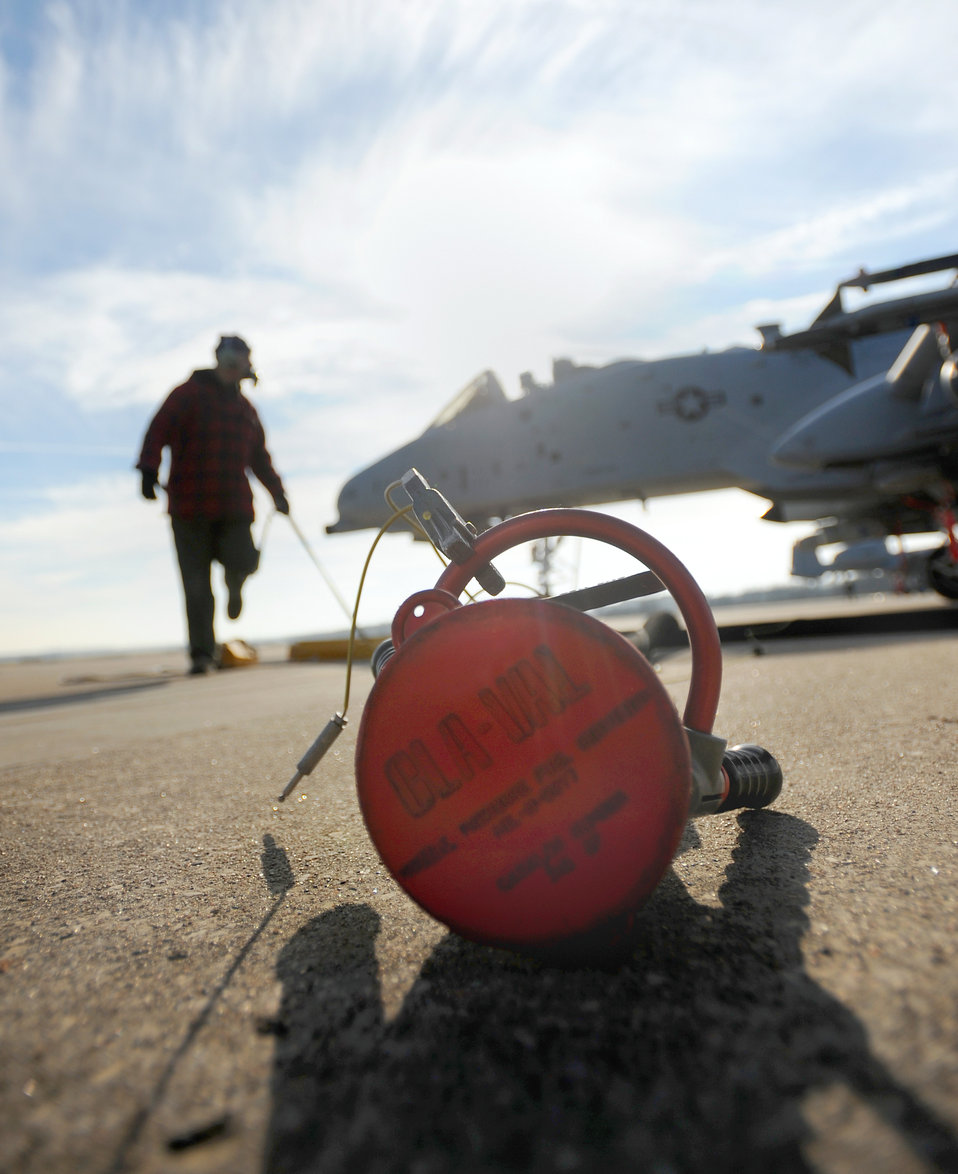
Hot pit refueling

A jet fuel hose for refueling is discarded after a hot pit refuel for a 442nd Fighter Wing A-10 Thunderbolt Dec. 8, 2010, at Whiteman Air Force Base, Mo. Hot pit refueling is a procedure usually performed in a combat situation to rapidly refuel aircraft while their engines are running to thrust pilots back into the fight.